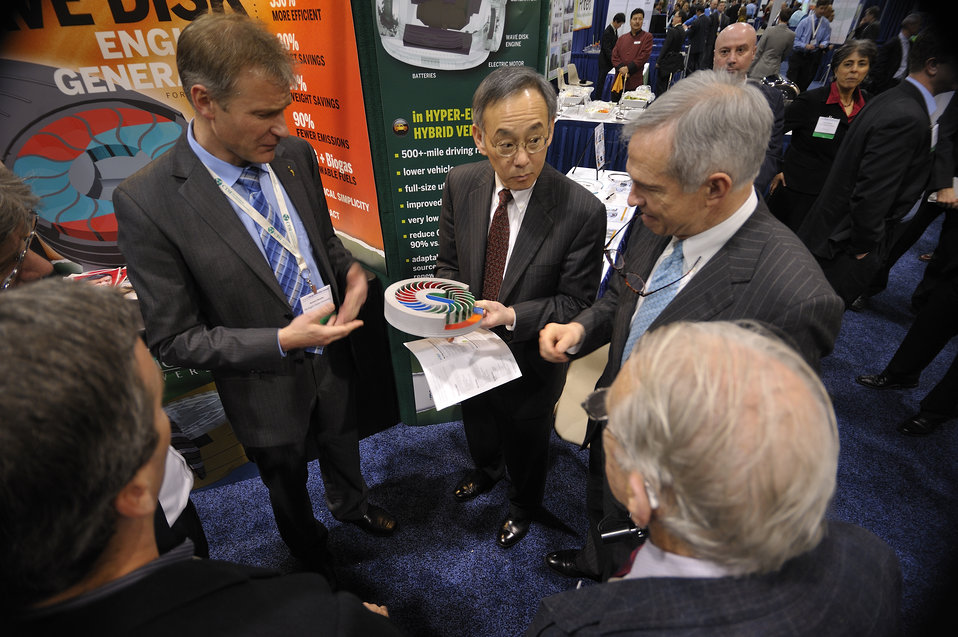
ARPA-E Energy Innovation Summit 2011, 54 of 83

Steven Chu, Secretary, United States Department of Energy holds a model of the Michigan State wave disk engine, while speaking with Bart Gordon, former Chairman of the House Science Committee during the summit's Technology Showcase.